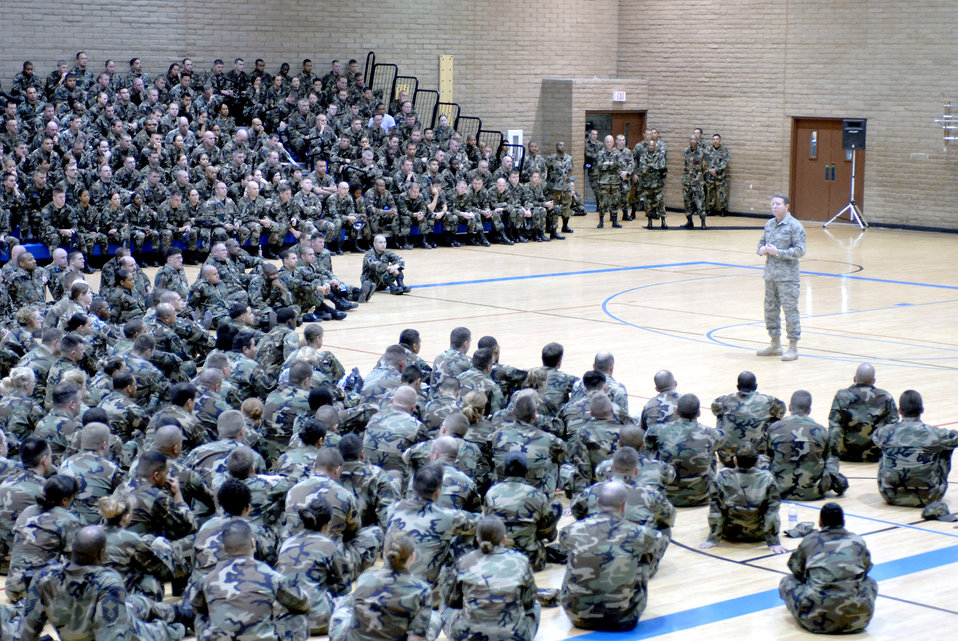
CMSAF visits Luke Airmen during Air Force Week

Chief Master Sgt. of the Air Force Rodney J. McKinley talks to Airmen at an enlisted call March 21 at Luke Air Force Base, Ariz. Chief McKinley discussed such topics as the new Air Battle Uniform and winning the war on terrorism. Chief McKinley is at Luke AFB as part of Air Force Week, which runs from March 19-23.